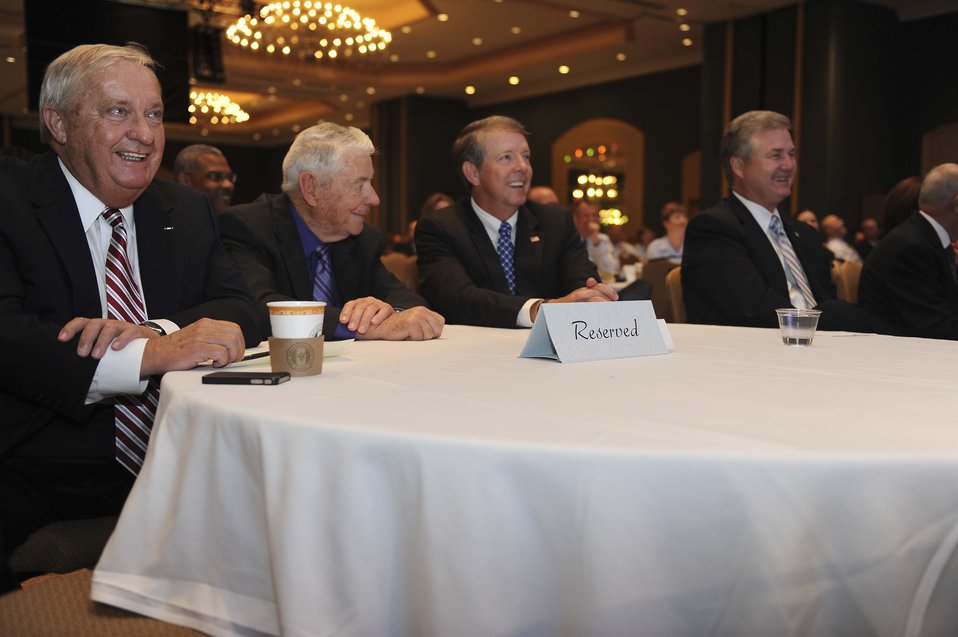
Former CMSAF forum

Former chief master sergeants of the Air Force listen as Air Force Chief of Staff Gen. Mark A. Welsh III shares his senior leadership perspective at the Air Force Sergeants Association Convention and Professional Airmen's Conference Jacksonville, Fla., Aug. 15, 2012. During his speech, Welsh emphasized the role leaders play in Airmen's lives as well as the importance of leaders getting to know their Airmen.